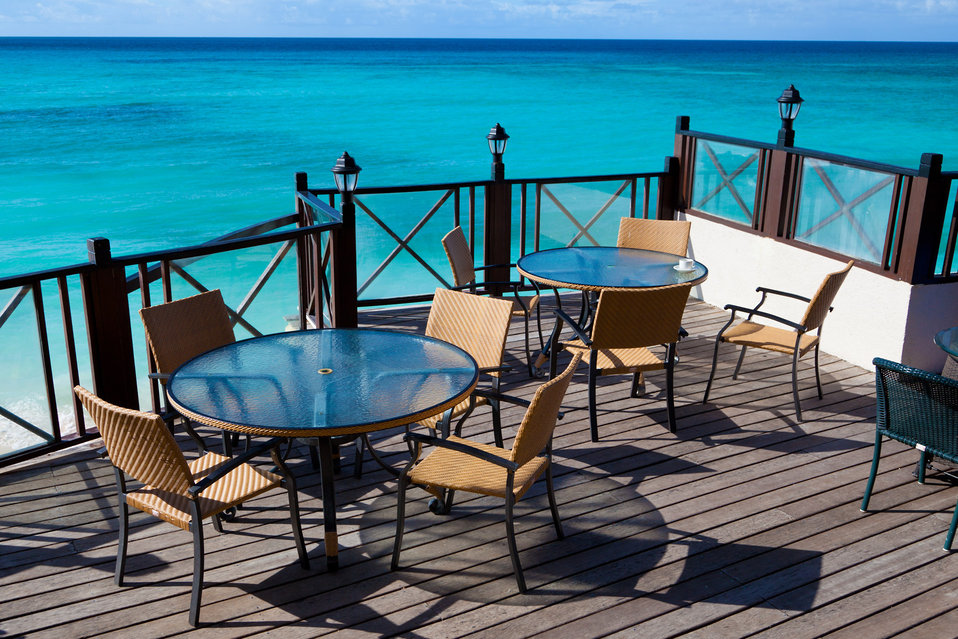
Restaurant tables with sea view

Restaurant tables with a sea view.